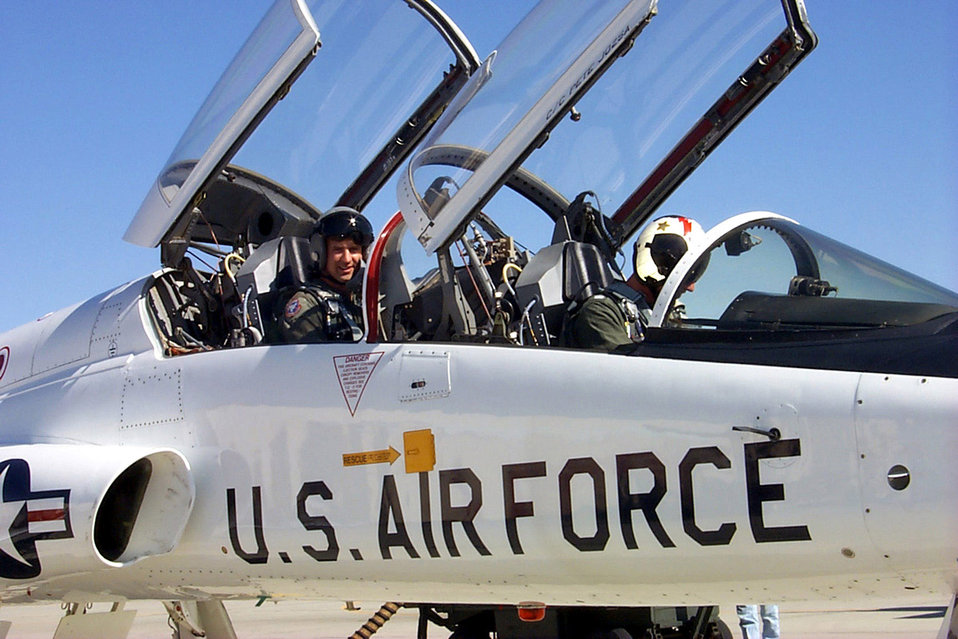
Pilot Exchange

EDWARDS AIR FORCE BASE, Calif. -- U.S. Air Force Test Pilot school instructor Maj. Phil Edwards, left, prepares Lt. David Ramsey, a U.S. Naval Test Pilot School student, for an exchange program training sortie. The more than 20-year-old tradition provides Navy test pilots, navagators and engineers to fly in various Air Force aircraft.